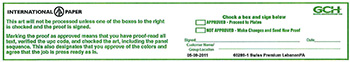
RECALLED – Orange Juice

March 3, 2014 – Product Recall – Lehigh Valley Dairy Conducts Voluntary Recall of Lehigh Valley, Swiss Premium, and Price Chopper Brand Orange Juice Because It May Contain Undeclared Allergen (Milk).